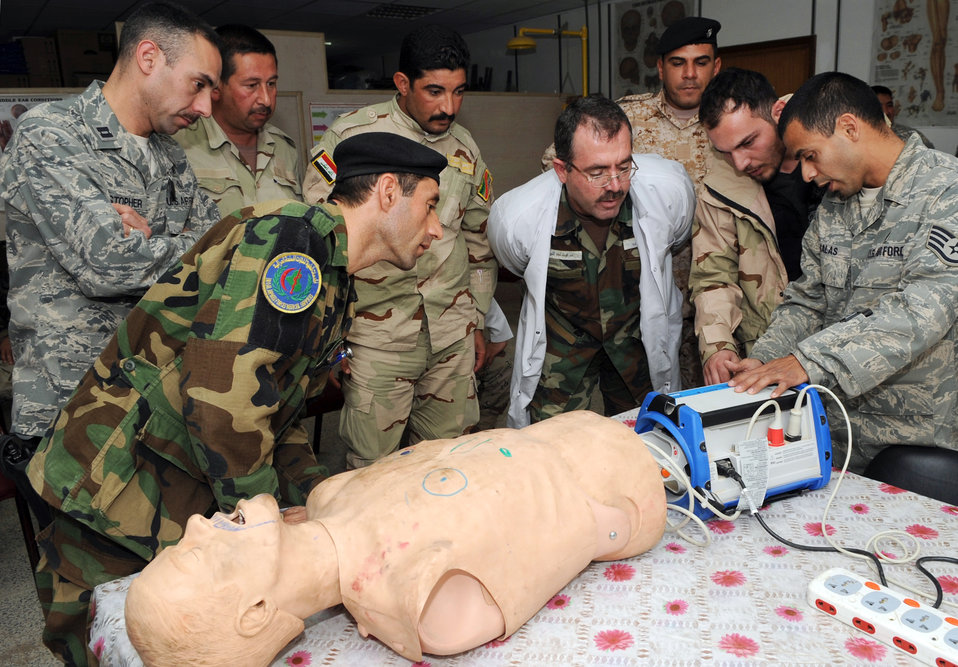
Kirkuk Airmen train Iraqi medics

Capt. Adam Christopher and Staff Sgt. Andrew Salas teach Iraqi medics how to use a defibrillator Feb. 16, 2010, at Kirkuk Air Base, Iraq. This training is part of the Expert Field Medical Batch four-week course offered to Iraqi medics at the K-1 Iraqi medical clinic in order to provide the experience they will need in real-world situations. Captain Christopher and Sergeant Salas are assigned to the 506th Expeditionary Medical Squadron.